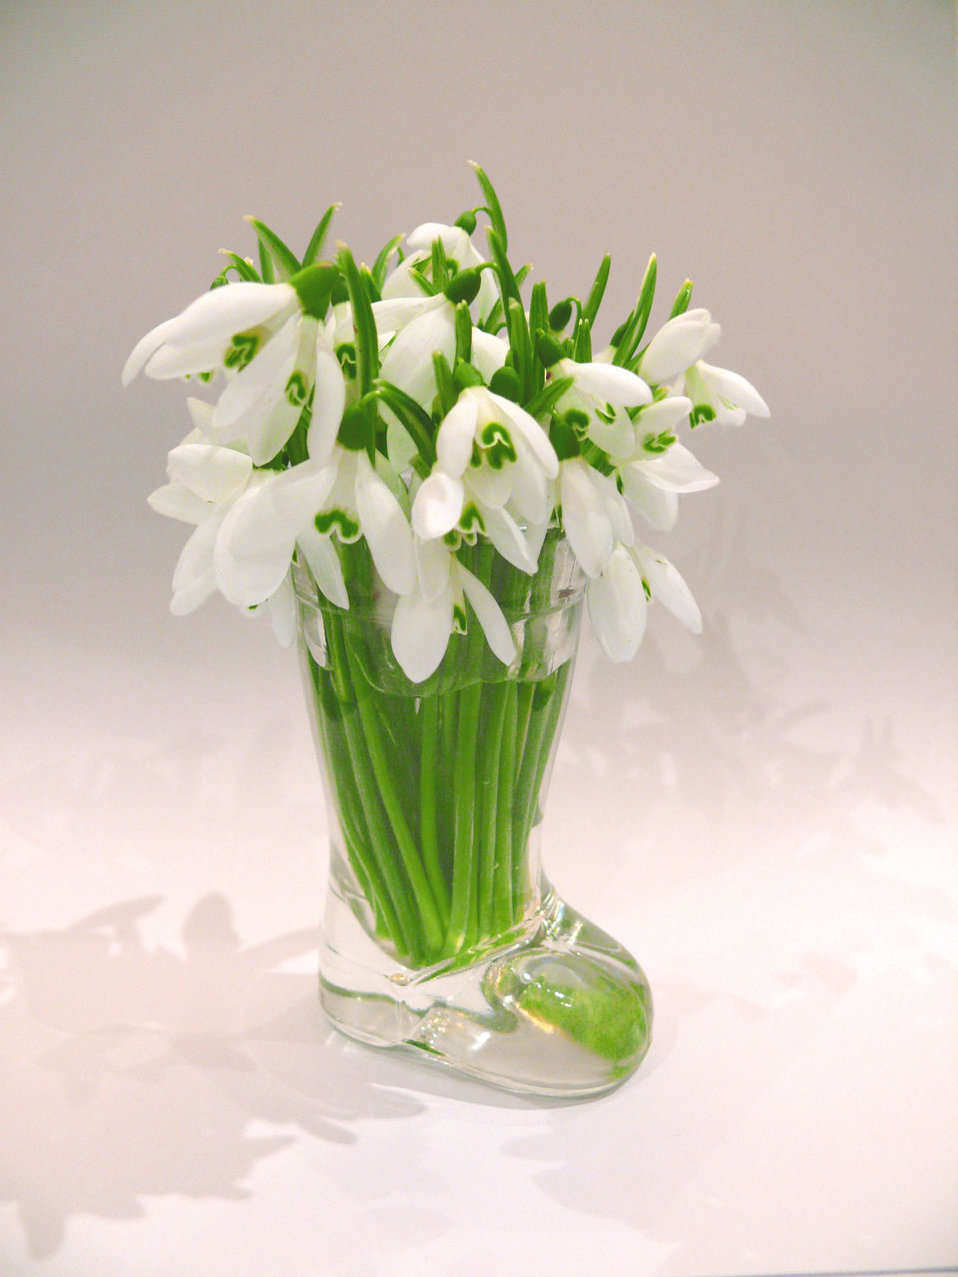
Snowdrops in the vase.